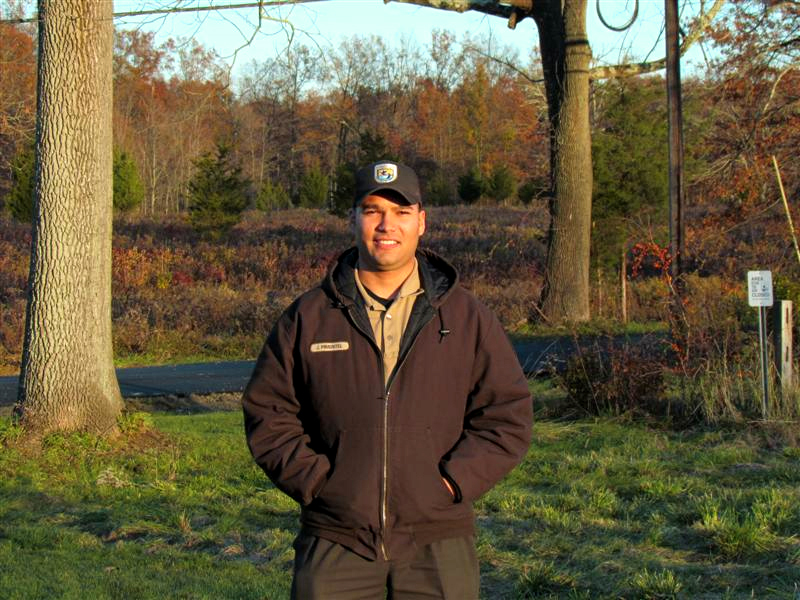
Jerfelis Pimentel, an Administrative Assistant for Great Swamp National Wildlife Refuge, served in the United States Air Force at Moody AFB from 2005 through 2009.